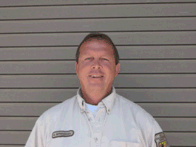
Michael Springman (U.S. Marine Corps 1976-1980 and USMC Reserve 1981-1985) is currently a maintenance Leader at Don Edwards San Francisco Bay NWR.